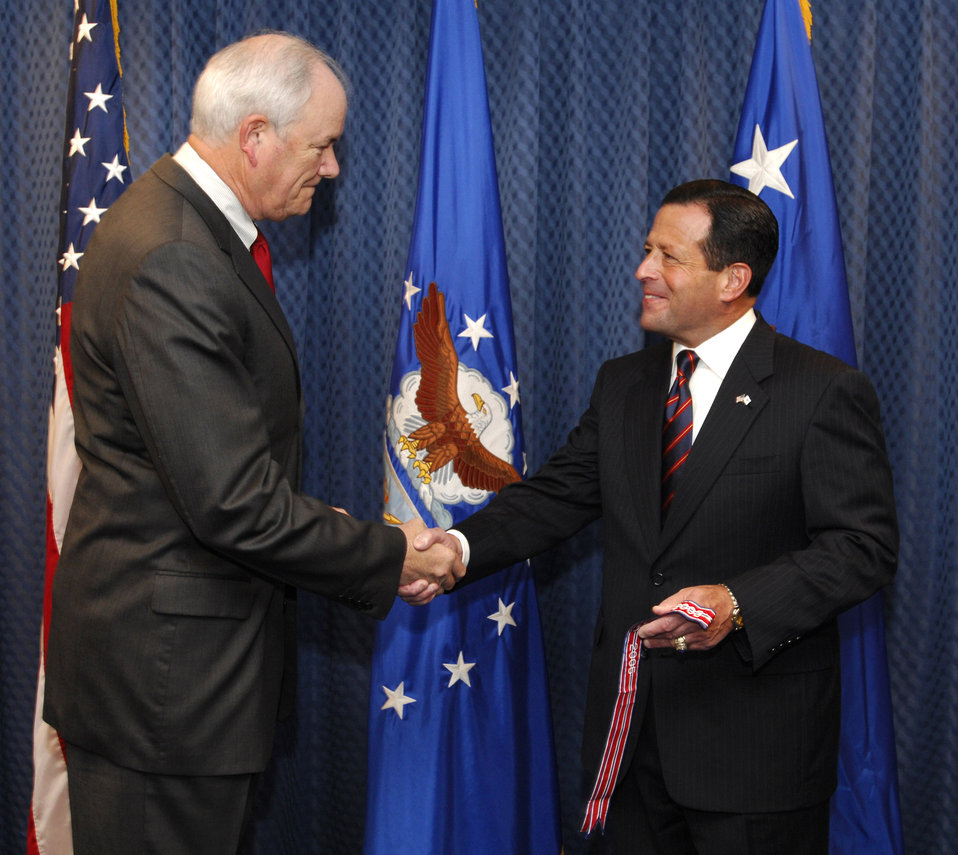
SECAF honors international affairs office with award

Secretary of the Air Force Michael W. Wynne (left) congratulates Bruce Lemkin, deputy undersecretary of the Air Force for International Affairs, at an award ceremony at the Pentagon Nov. 15. The members of SAF/IA were honored with the Air Force Organizational Excellence Award.